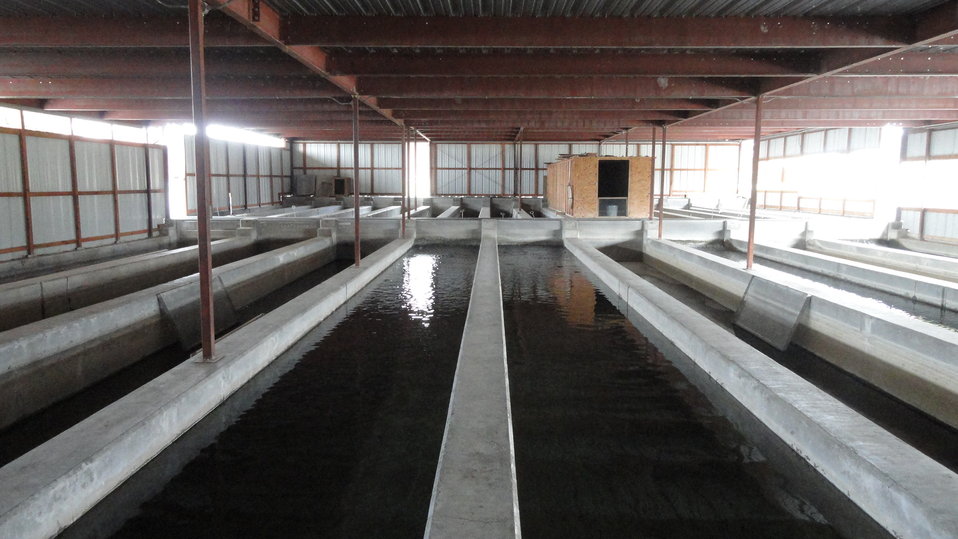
Visiting Saratoga National Fish Hatchery

In April of 2014, regional office employees visited Saratoga National Fish Hatchery to learn more about its efforts towards recovering the Wyoming toad (Bufo baxteri).

The hatchery adopted a unique role in becoming the first unit in the National Fish Hatchery System to become involved in rearing endangered amphibians. The Wyoming toad was a common sight on areas of the Laramie Plains, Albany County, Wyoming, into the early 1970s but the species' populations crashed in the mid-1970s. The Wyoming toad was listed as endangered by the U.S. Fish & Wildlife Service in January 1984. Found only in southwestern Wyoming, the Wyoming toad is considered the most endangered amphibian in North America. The hatchery maintains a captive population for breeding, rearing, and refugia, and the offspring from this program will be used for reintroduction efforts.